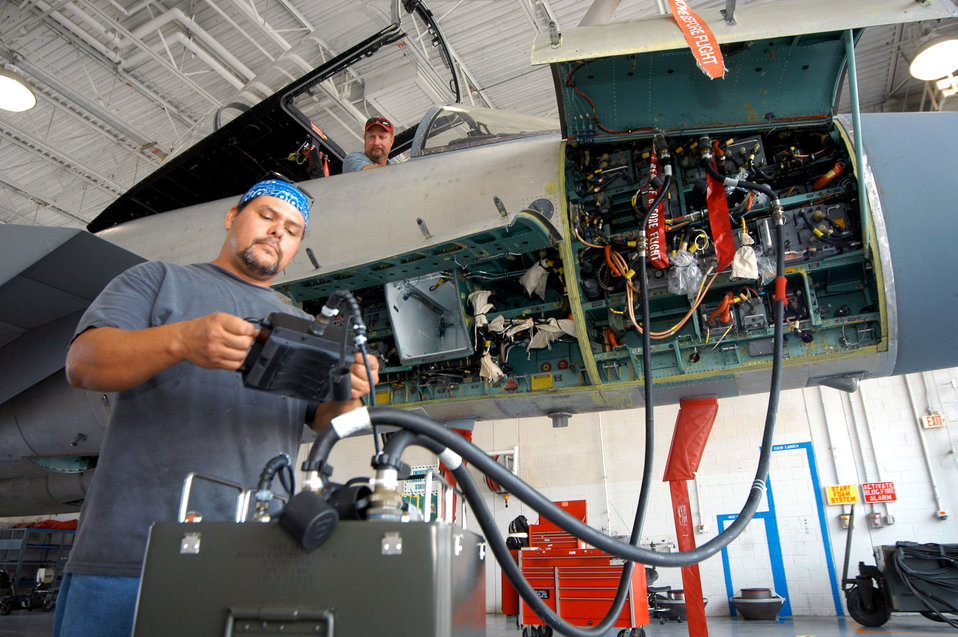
Automated test helps maintainers solve F-15 problems

John Hysell and Henry Sparks get a look at one of the automated flight test control systems of an F-15 Eagle during a demonstration Aug 1 at Robins Air Force Base, Ga. The tester plugs into the F-15, like hooking up a car engine to a computer to discover engine trouble. Mr Hysell and Mr. Sparks are aircraft mechanics.